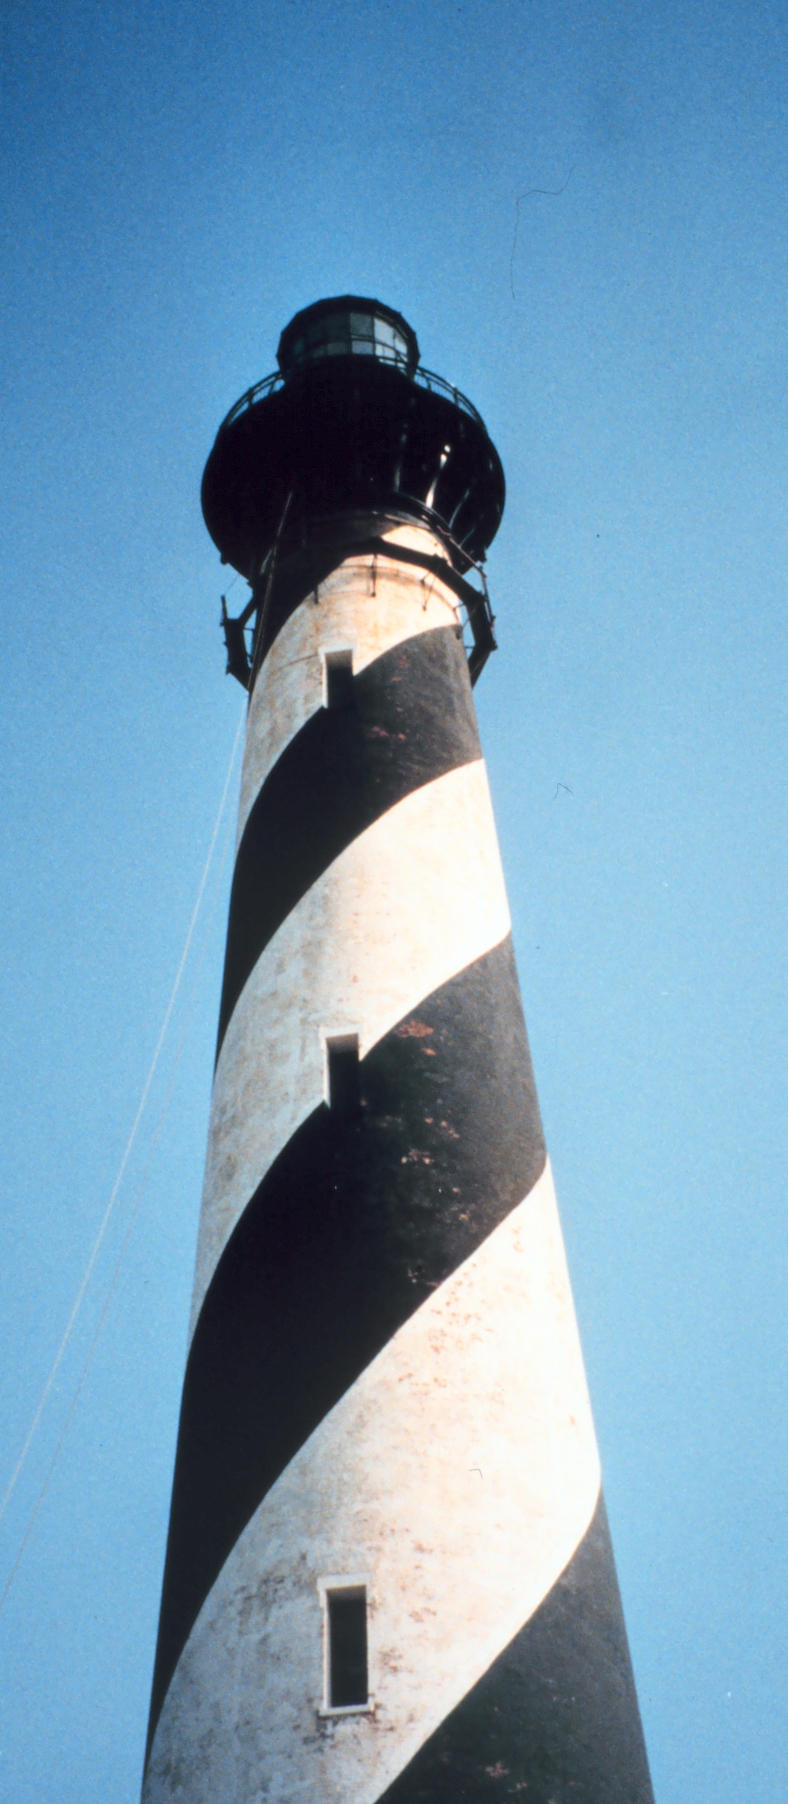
Cape Hatteras Lighthouse